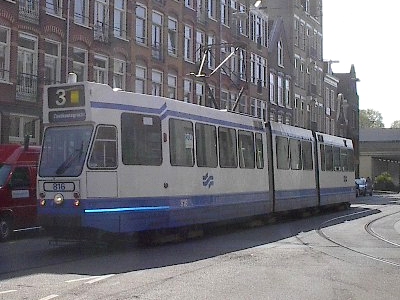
10G Zoutkeetsgracht